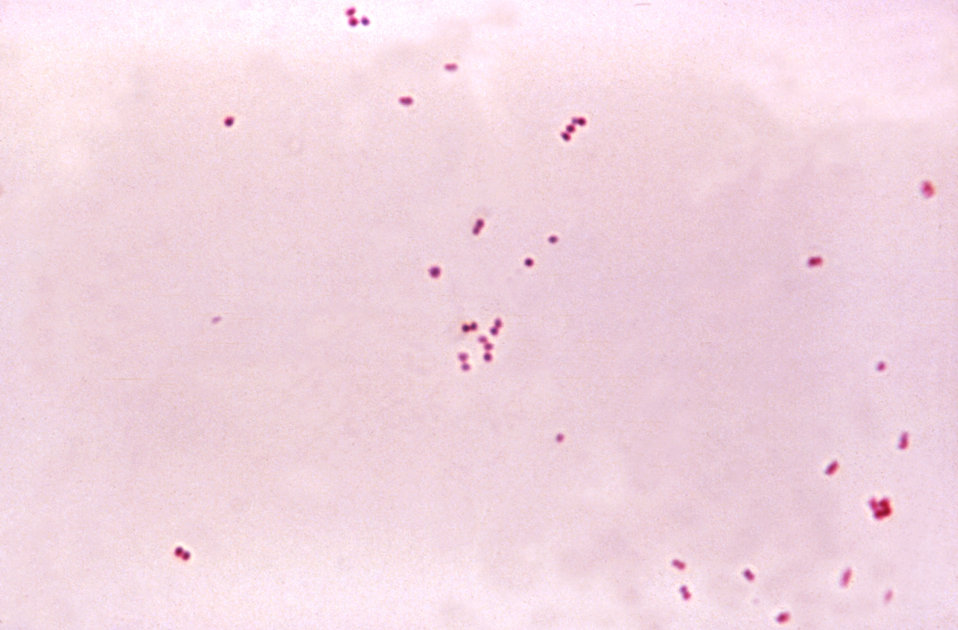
This micrograph depicts the presence of aerobic Gram-negative Neisseria meningitidis diplococcal bacteria; Mag. 1150X.